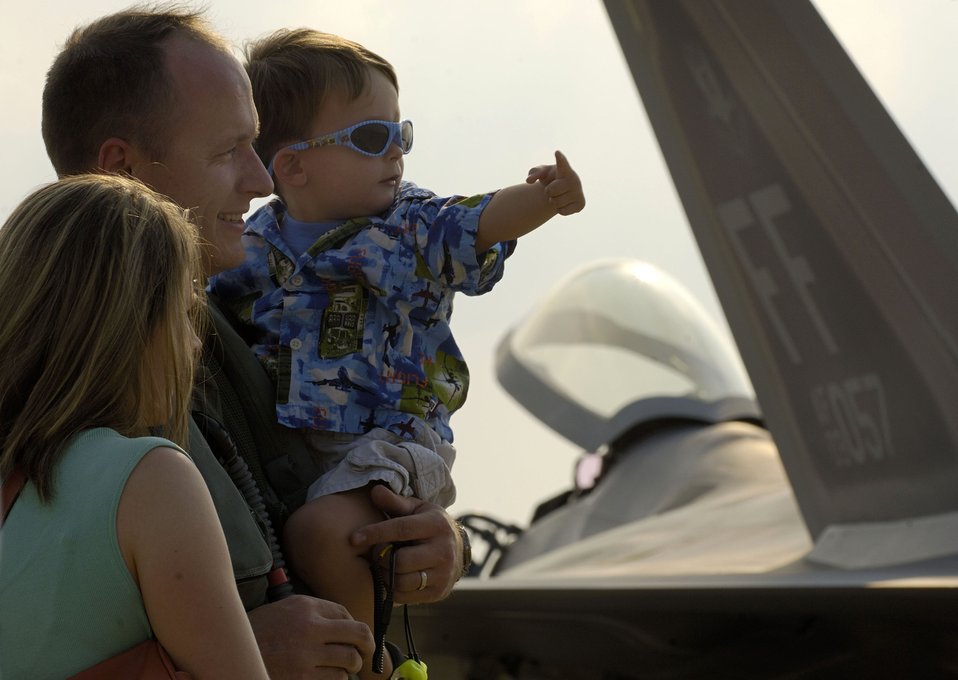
Raptors await return of roost

Capt. Daniel Lee shares a moment with his son, Benton, and wife, Rebecca, after arriving at Naval Air Station Oceana, Va., on Friday, June 30. The 27th Fighter Squadron, along with the 71st and 94th FS from Langley Air Force Base, Va., are flying sorties from other installations because of runway repairs at their home station. Captain Lee, who just returned from Elmendorf AFB, Alaska, is an F-22 Raptor pilot assigned to the 27th FS.